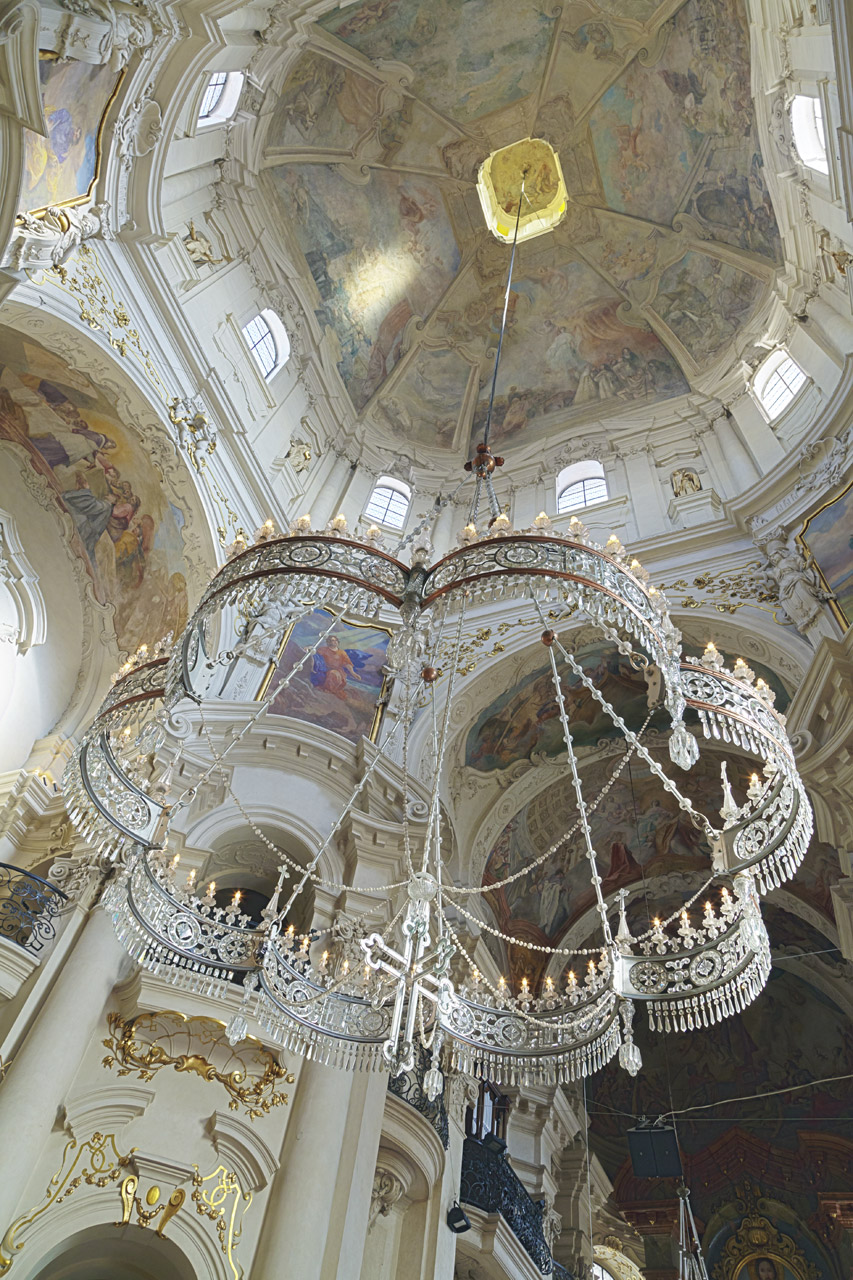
St. nicholas church

Inside st. nicholas church in prague.